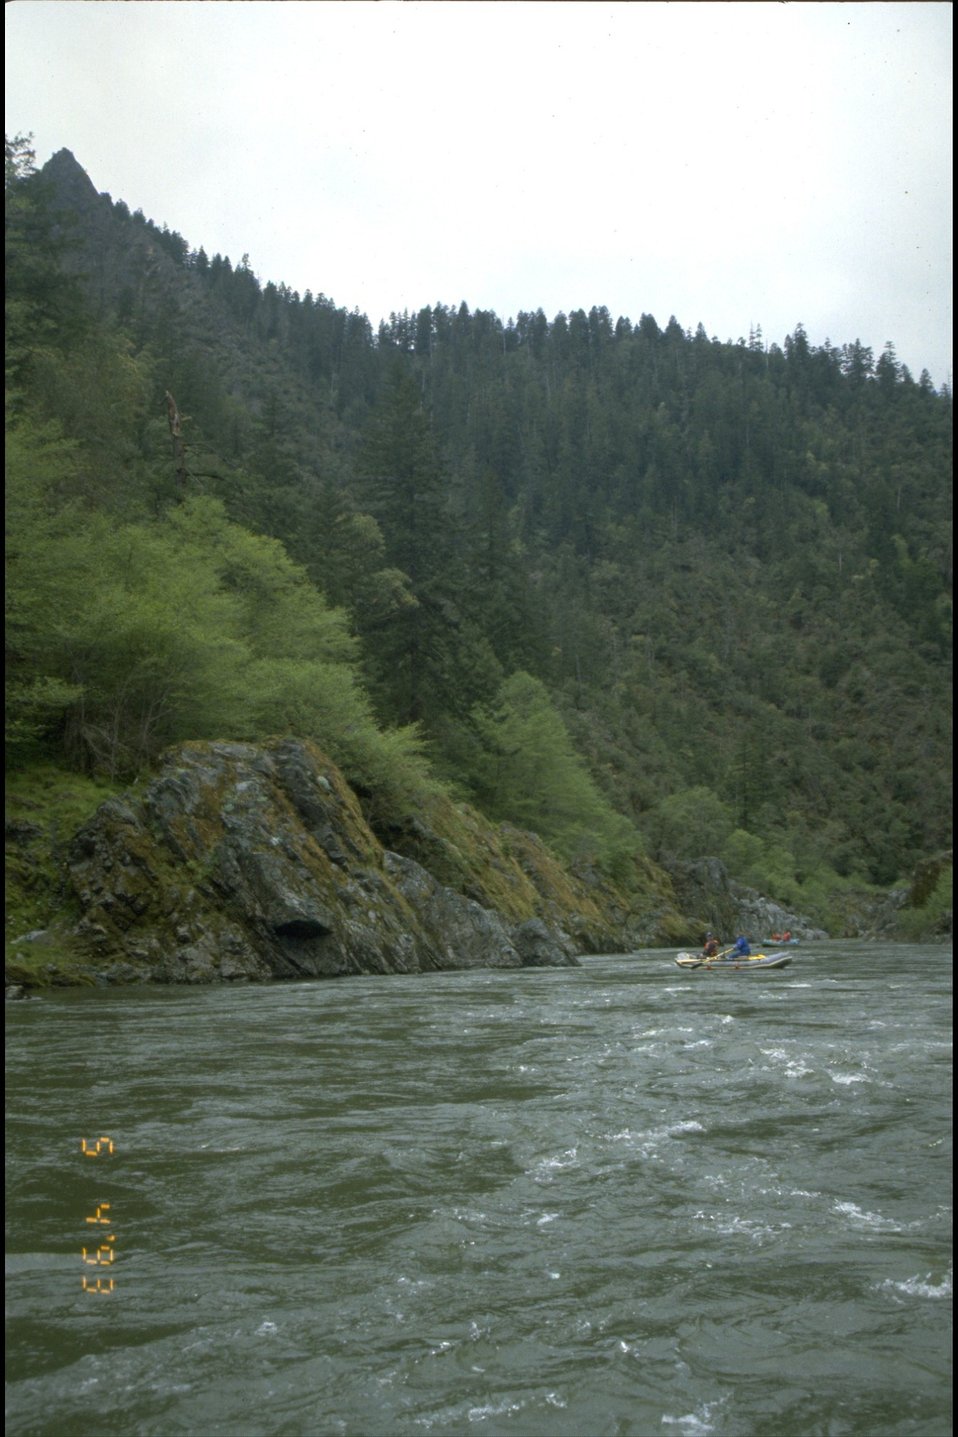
Mule Creek Canyon on the Wild section of the river.